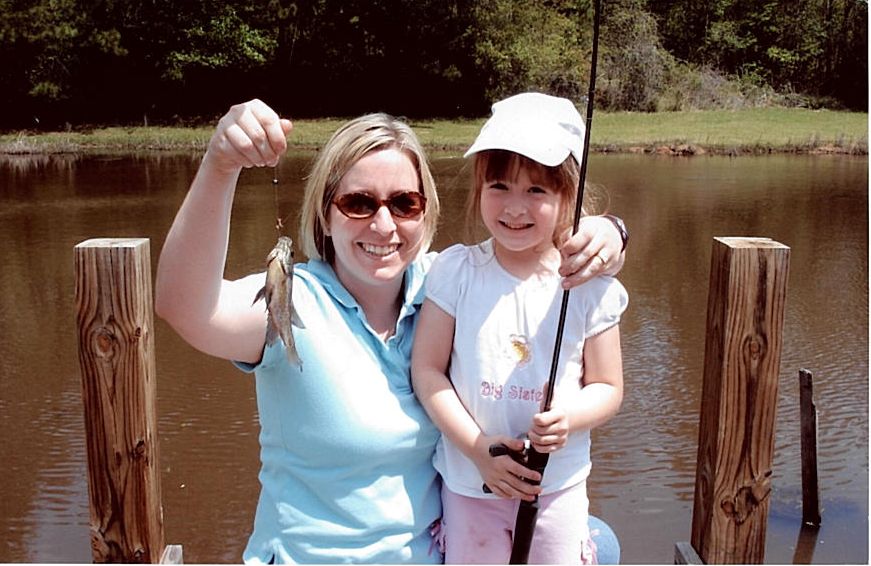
Fishing lesson

Mindy Gautreaux and daughter Jordan show off their catch after Mindy gave Jordan a fishing lesson at a camp in Mississippi.
Today, Gautreaux is deputy refuge manager at Okefenokee National Wildlife Refuge in Georgia.